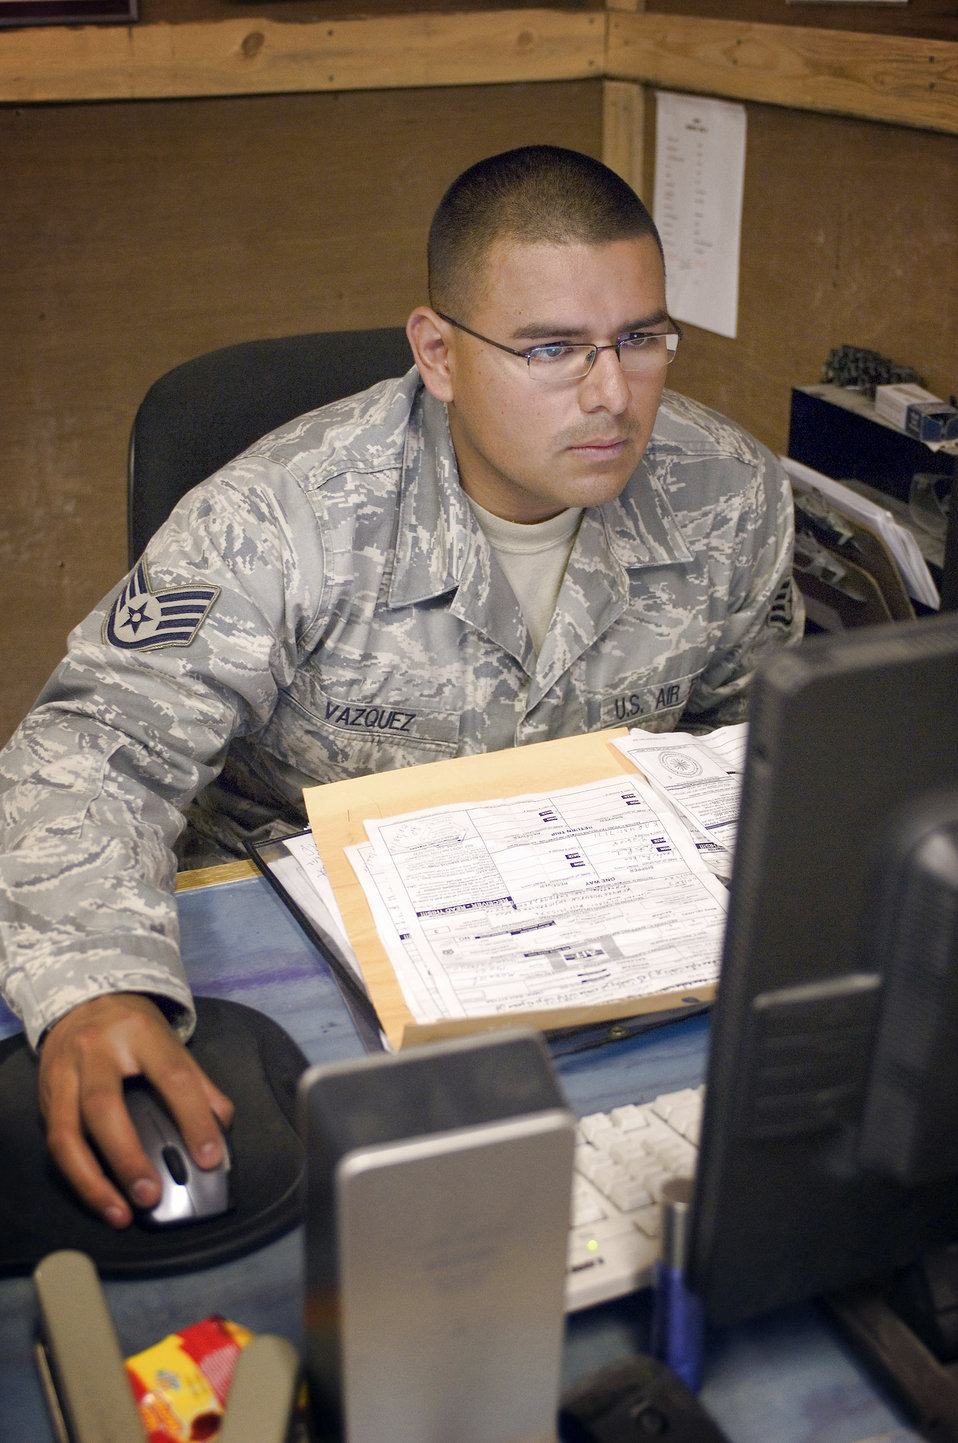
Airmen manage cargo at logistical hub in Afghanistan

Staff Sgt. Arnoldo Vazquez prepares documents on truck drivers and supplies coming in the next day to Forward Operating Base Salerno, Afghanistan, recently. As part of the surface military cargo team, Sergeant Vazquez searches and processes every supply truck entering and exiting the FOB. Sergeant Vazquez is deployed from Eielson Air Force Base, Alaska, and is a traffic management craftsman.